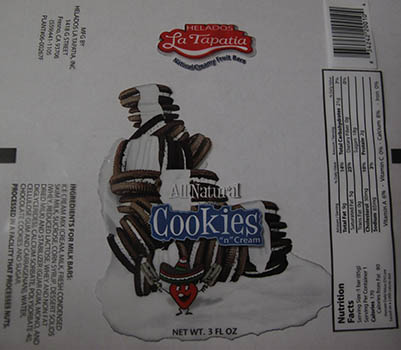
RECALLED – Ice cream products

March 19, 2014 – Product Recall – Helados La Tapatia, Inc. Recalls Products Because of Possible Health Risk.